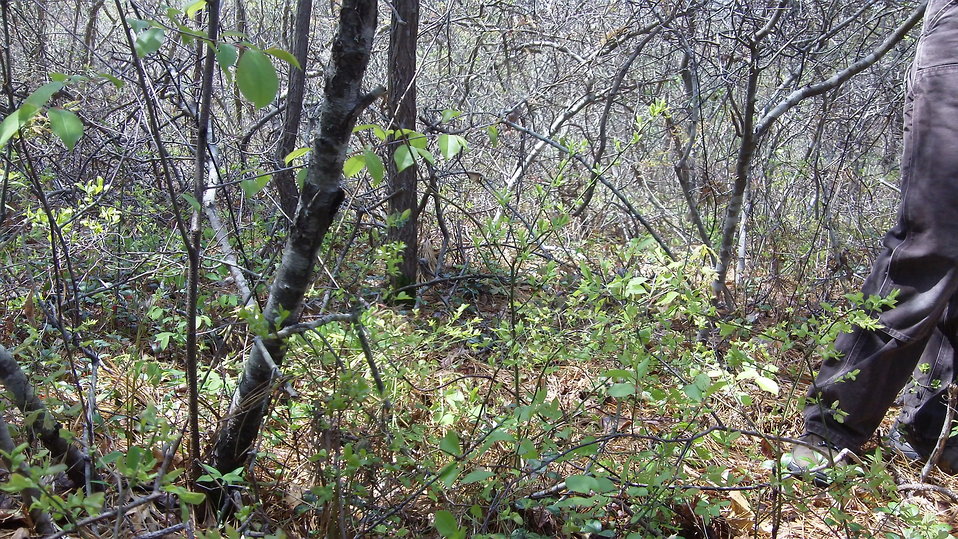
New England cottontail habitat

The thickets that New England cottontails choose as habitat are often nearly impenetrable and may contain features like dens, stone walls, and tangles of vines that the rabbits can use for even more secure cover from predators, and for winter thermal cover.